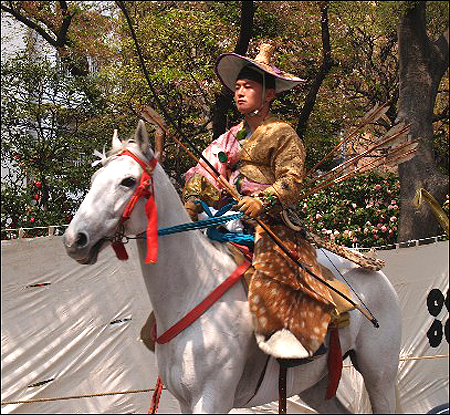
Kyudo Yabusame.